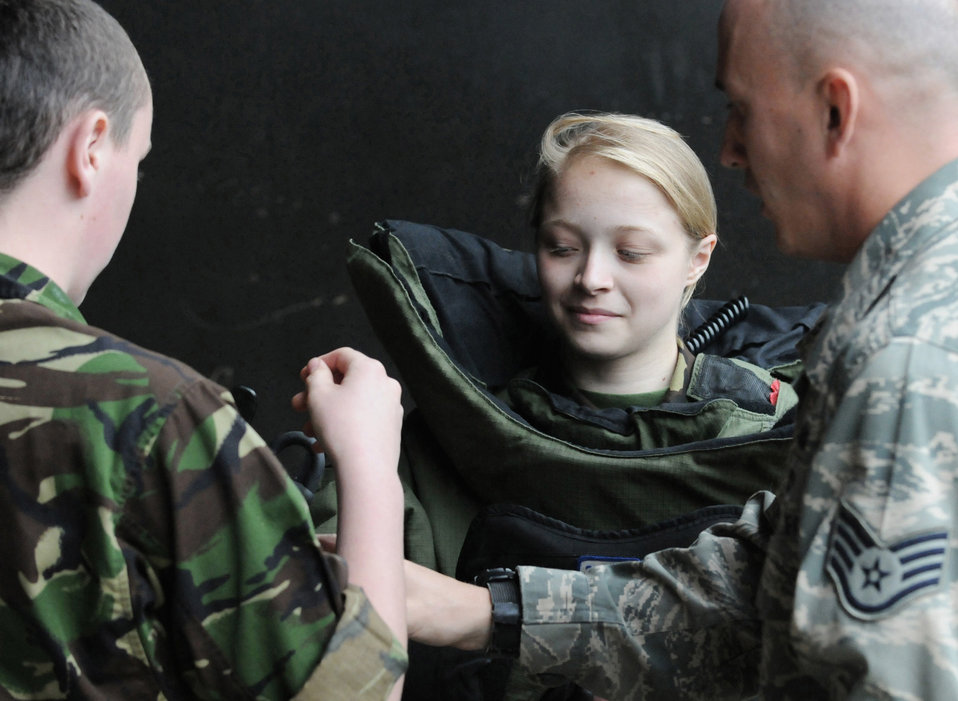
British cadets nurture 'spirit of adventure' at Ramstein

Royal Air Force Air Cadet Cpl. Charlotte Bennetts suits up in an explosive ordnance disposal bomb suit during a July 14 visit to Ramstein Air Base, Germany. RAF cadets visited Ramstein AB for a week of leadership development and contingency skills training.